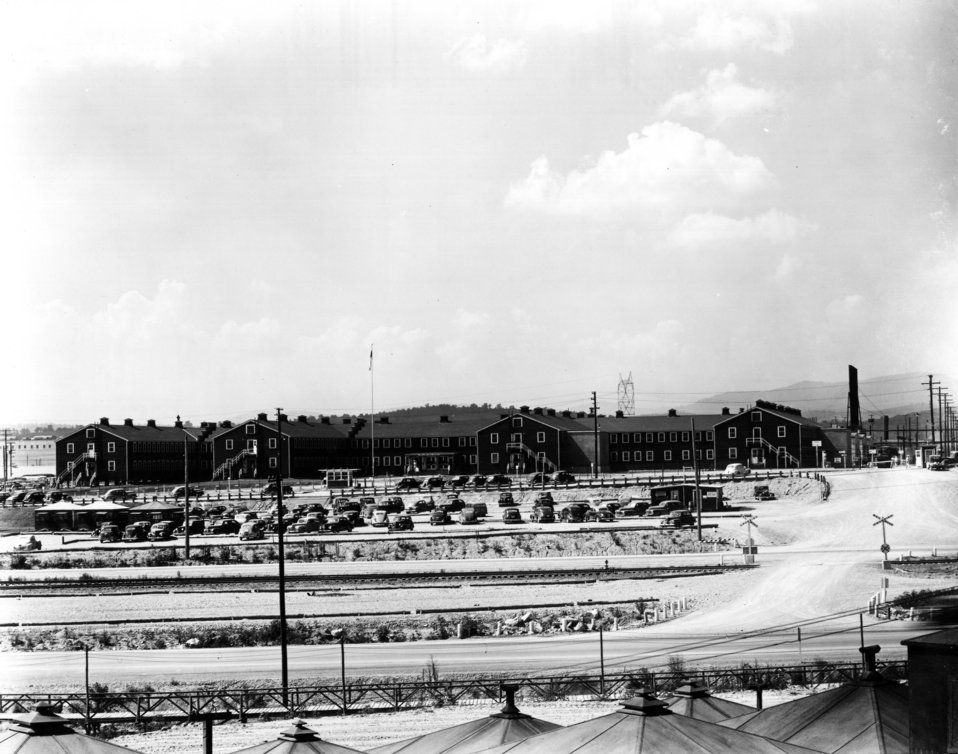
K-25 at Oak Ridge